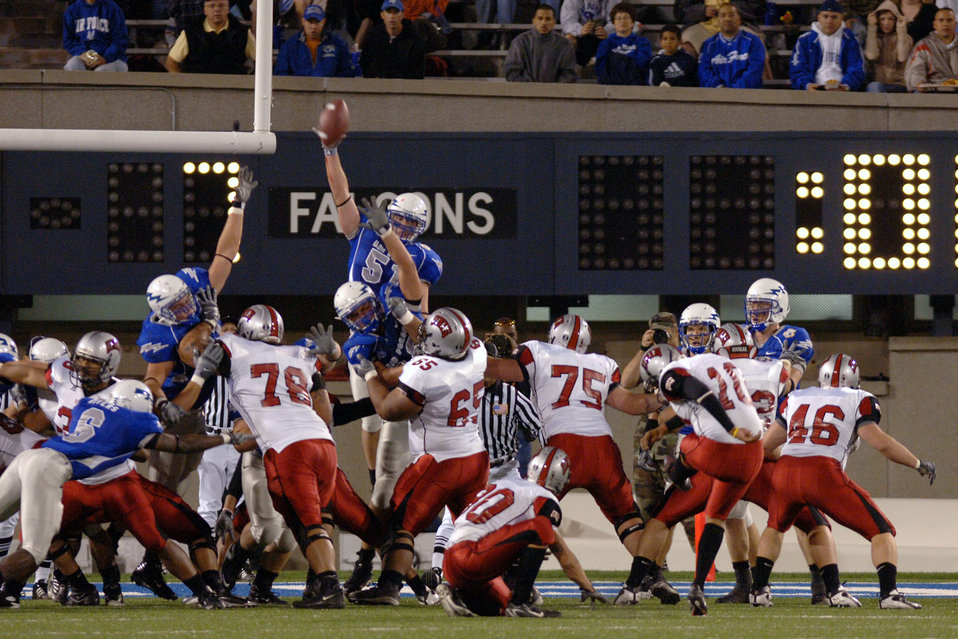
Falcons back on winning track, 31-14

Air Force linebacker Aaron Shanor reaches in vain to block a field goal attempt by UNLV's Sergio Aguayo, 10, during the Falcons 31-14 win at Falcon Stadium Oct. 6. Shanor registered 10 tackles on defense, including four solo.